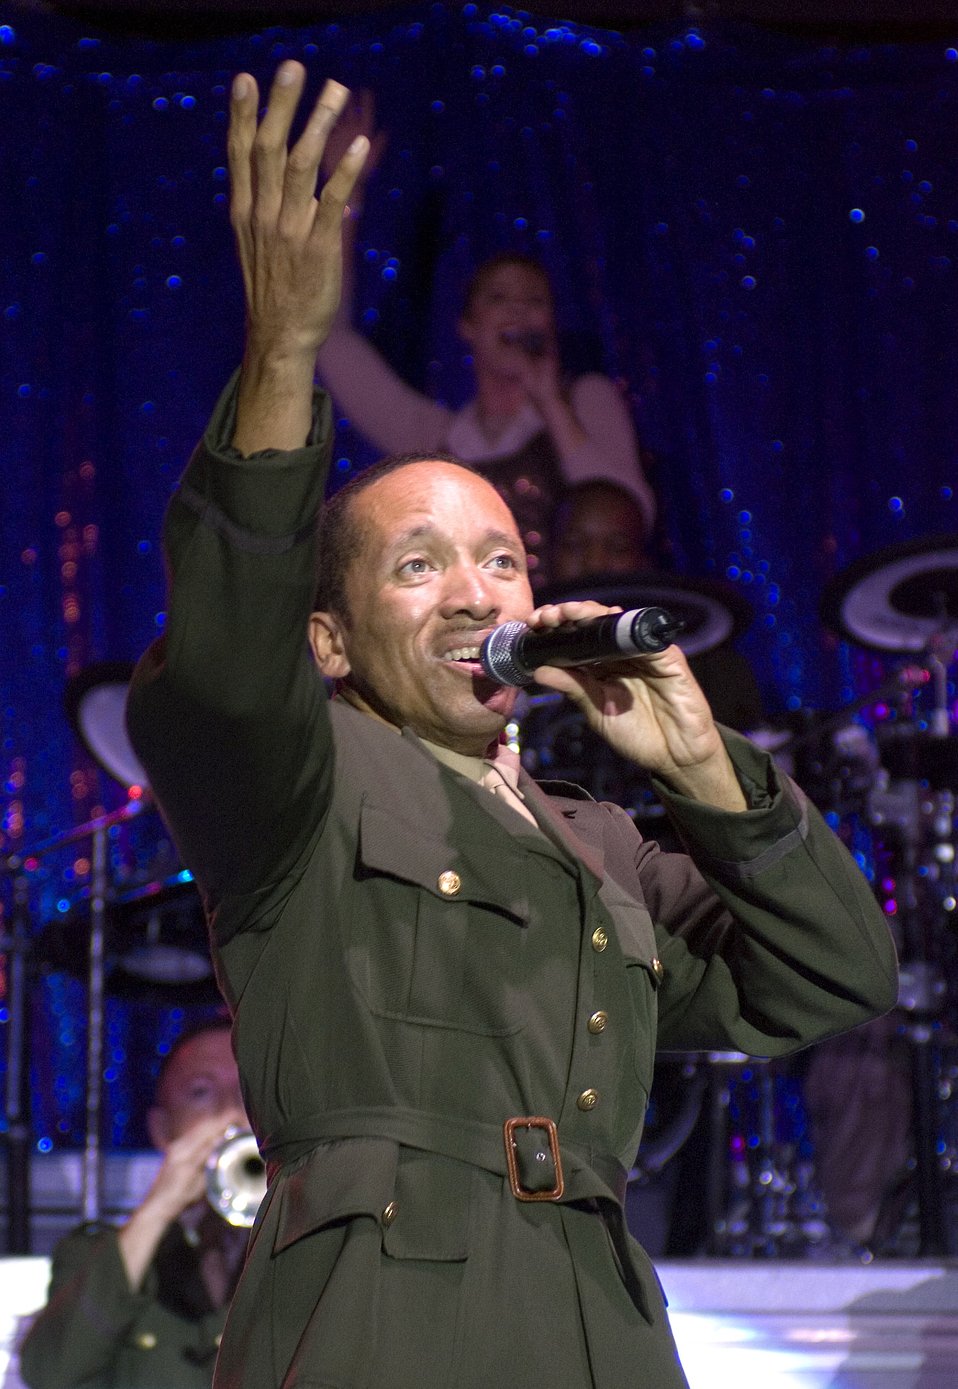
Air Force Week Atlanta

Tech. Sgt. Keith Martin Sr. performs during the Tops in Blue